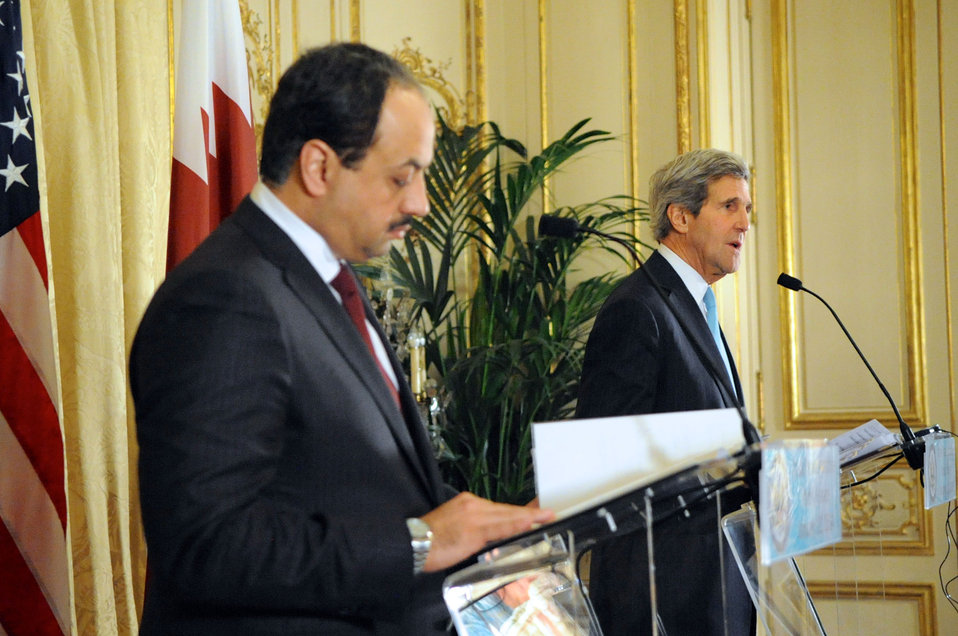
Secretary Kerry Delivers Remarks With Foreign Minister Khalid bin Mohammad al-Attiyah of Qatar

U.S. Secretary of State John Kerry delivers remarks at a press conference with Foreign Minister Khalid bin Mohammad al-Attiyah of Qatar after a meeting of the London 11 group in Paris, France, on January 12, 2014.